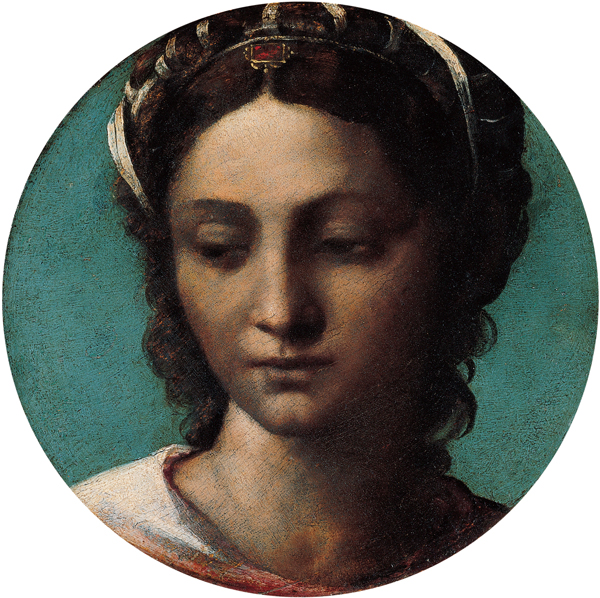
'Head of a Woman', oil on panel painting by Sebastiano del Piombo (Sebastiano Luciani)